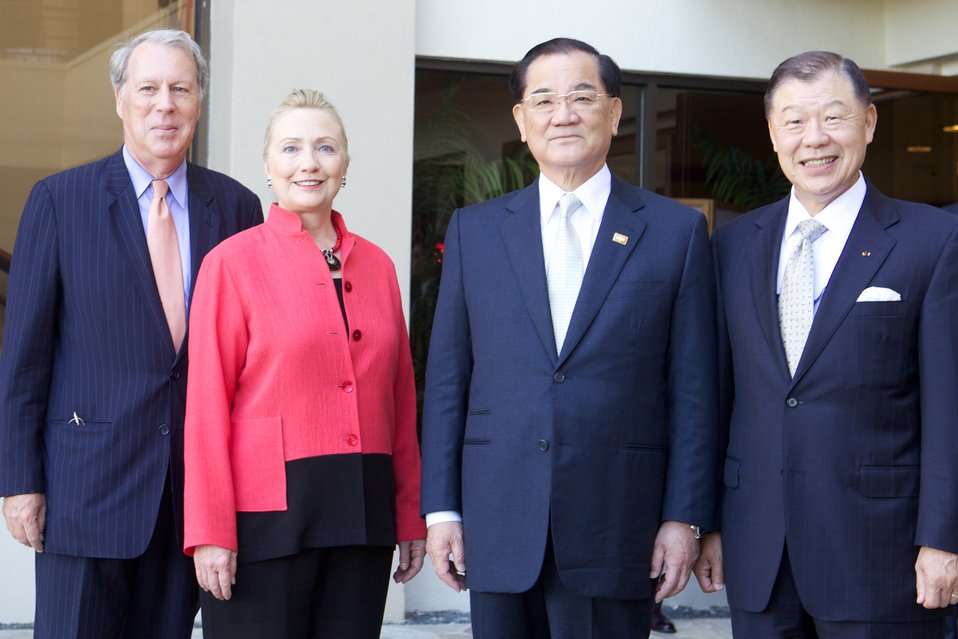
Secretary Clinton Meets With Leader's Representative of Chinese Taipai

U.S. Secretary of State Hillary Rodham Clinton meets with Leader's Representative of Chinese Taipai Dr. Lien Chan on the sidelines of APEC in Honolulu, Hawaii, on November 12, 2011.